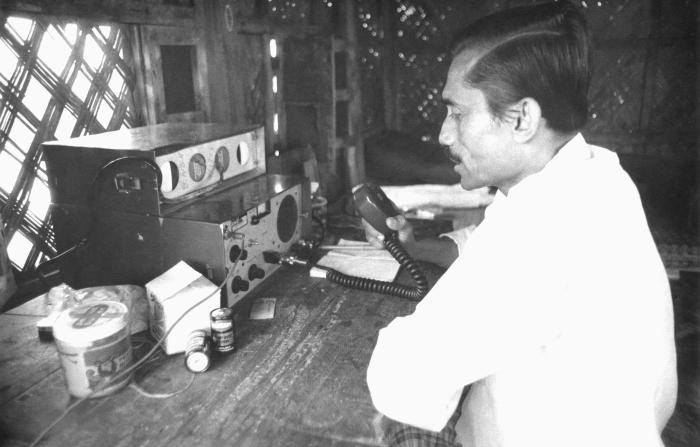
This Bangladesh man was communicating to field technicians over a network known as the 'Smallpox Zero Radio', which was an integral method of communication between smallpox eradication team members. Data collection was followed by data analyses. These findings had to be transmitted between members, so as to make eradication efforts most efficient, and radio was a proven technology that enabled this to take place. At the time, this man was distributing the 'weekly report', which consisted of any new case findings, supply line deliveries, and pertinent team member protocols.